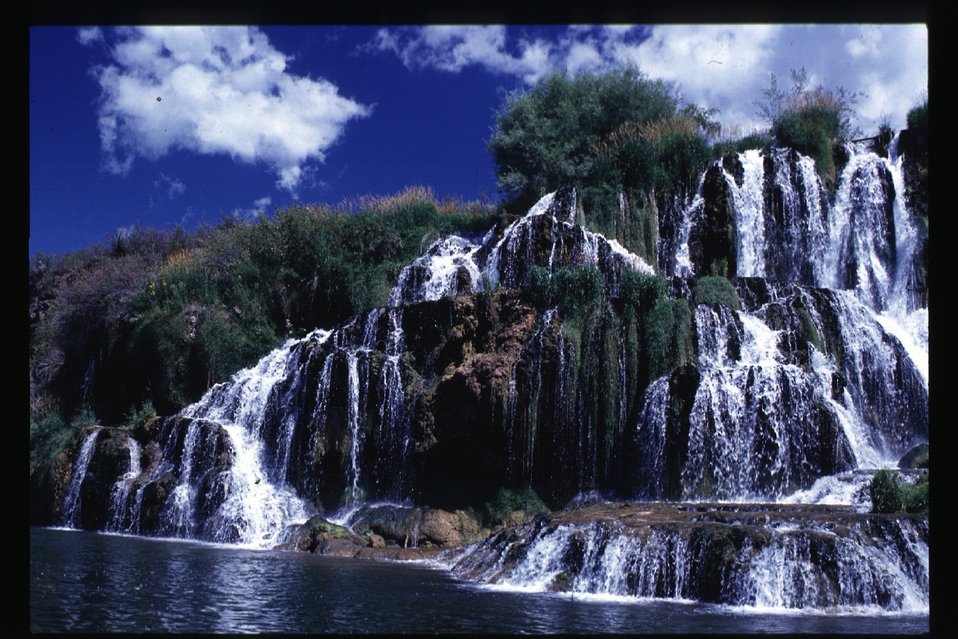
Water fall Scenic river Idaho Falls Field Office USRD Upper Snake River District